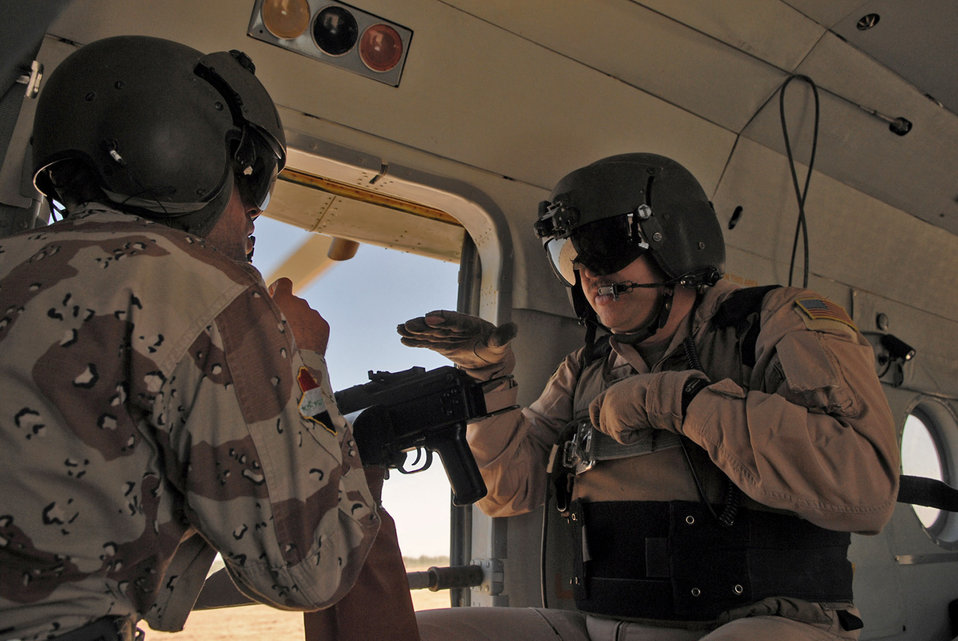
Airmen help Iraqi air force become self-sustaining service

Master Sgt. Bradley Martens explains the proper clearing procedures for landing around obstacles to an Iraqi air force aerial gunner trainee during a training mission May 29 over Camp Taji, Iraq. Gunners are the third eye for helicopter pilots enabling then to see areas that are not in their field of vision from the cockpit, for example the tail rotor. Sergeant Martens is 770th Air Expeditionary Advisory Squadron lead aerial gunner training instructor deployed from Hurlburt Field, Fla.